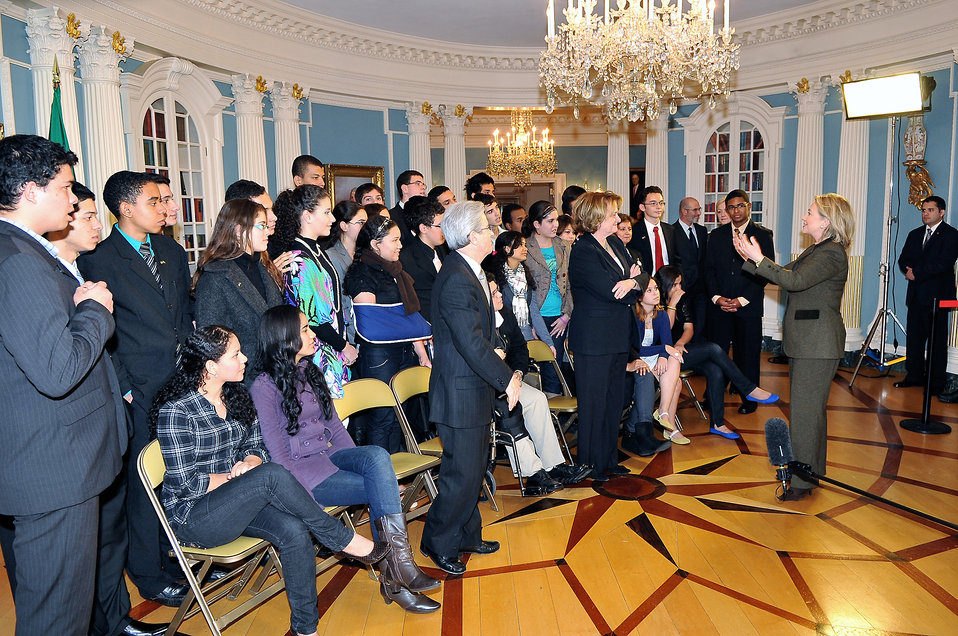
Secretary Clinton Speaks With Brazilian Youth Ambassadors

U.S. Secretary of State Hillary Rodham Clinton speaks with Brazilian Youth Ambassadors in the Treaty Room at the U.S. Department of State in Washington, D.C., on January 27, 2011.